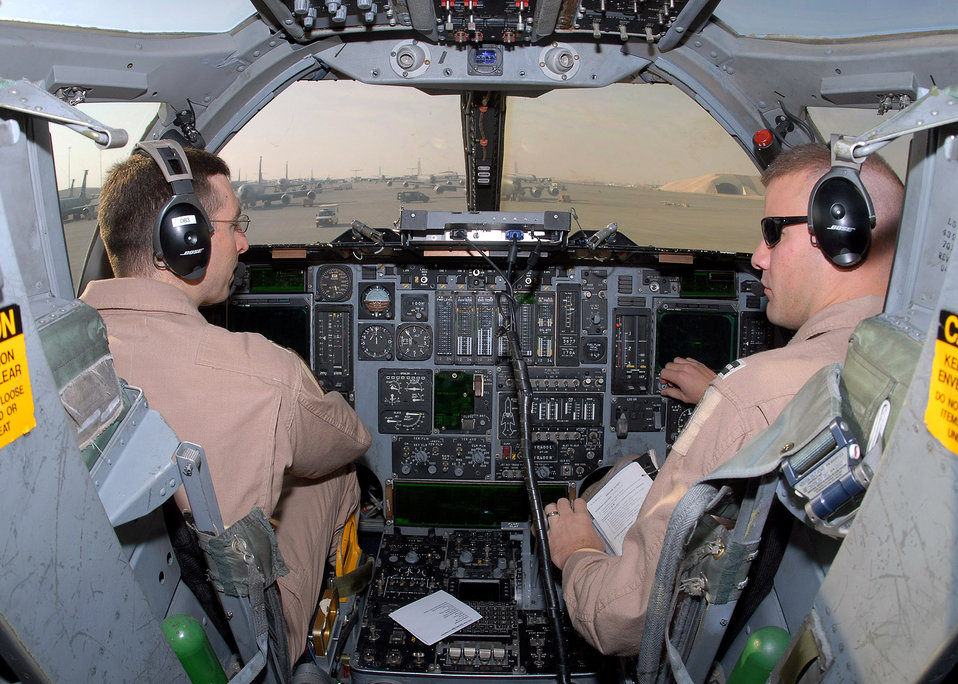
Getting a B-1B ready to launch

Maj. Anthony Mincer (left) and Capt. Brian Buschur run through their preflight checklist in a B-1B Lancer Dec. 29 prior to a mission. The two pilots are with the 9th Expeditionary Bomb Squadron at an air base in Southwest Asia.